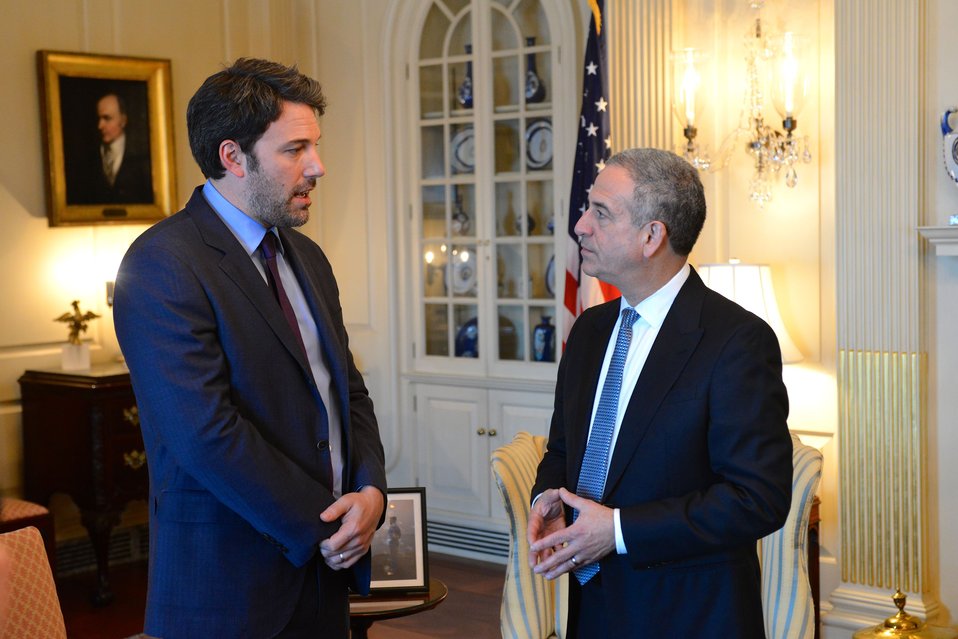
Special Envoy Feingold Meets With Ben Affleck

Special Envoy for the Great Lakes Region of Africa and the Democratic Republic of the Congo speaks with Ben Affleck, Founder of the Eastern Congo Initiative, at the U.S. Department of State in Washington, D.C., on February 26, 2014.